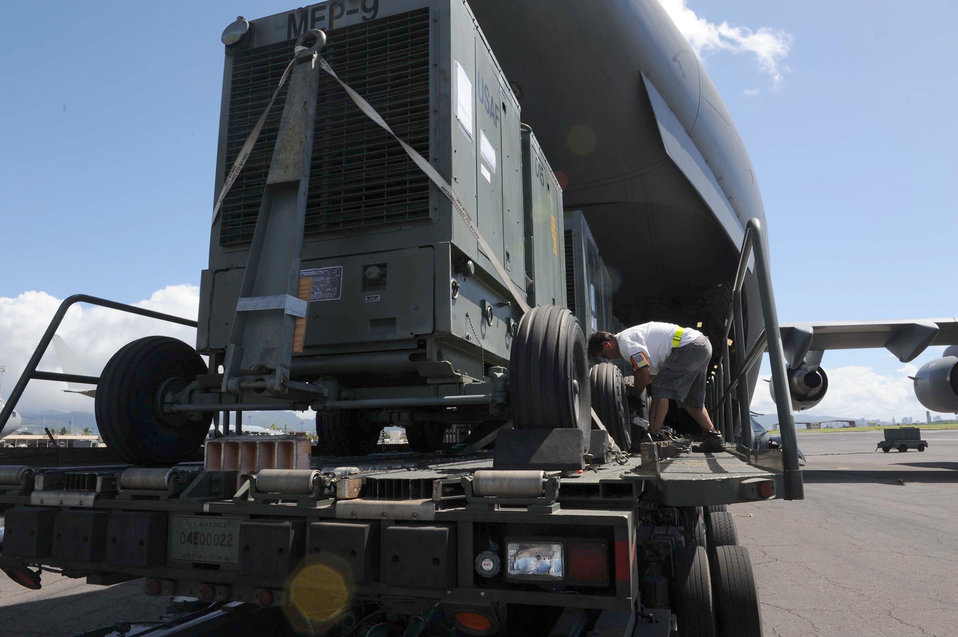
humanitarian mission to Japan

A 735th Air Mobility Squadron ramp service technician loads generators onto a U.S. Air Force C-17 Globemaster III cargo aircraft at Joint Base Pearl Harbor-Hickam, Hawaii, in preparation for its departure on a humanitarian mission to Japan on March 12, 2011. The C-17 will be flown various Air Force bases in Japan during its mission to provide support for Japan relief efforts in the wake of tsunami and earthquake damage there.